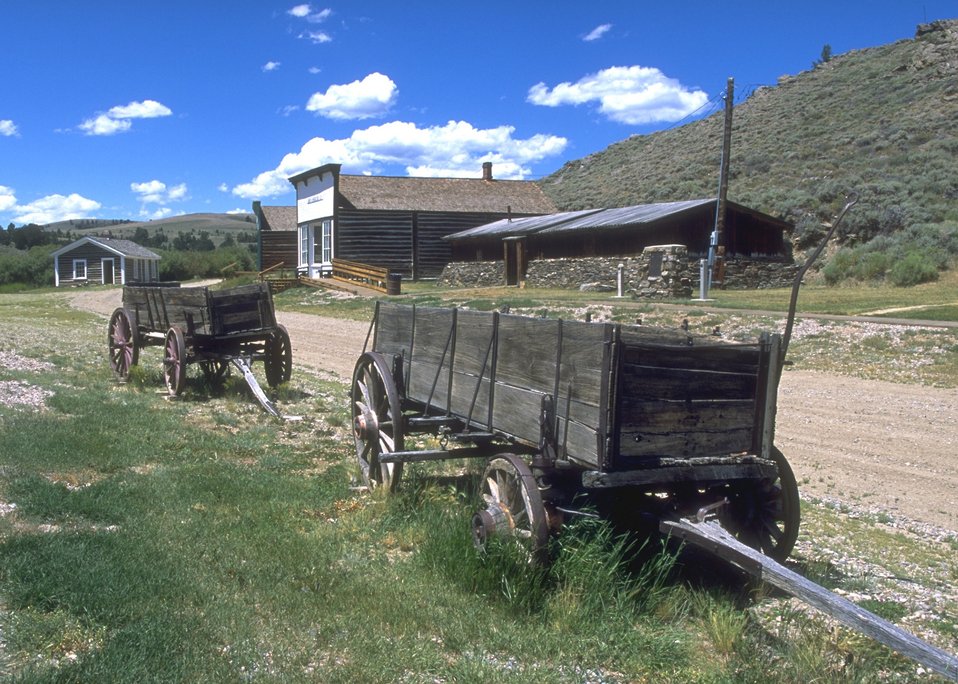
Restored buildings at South Pass City, Lander Field Office.